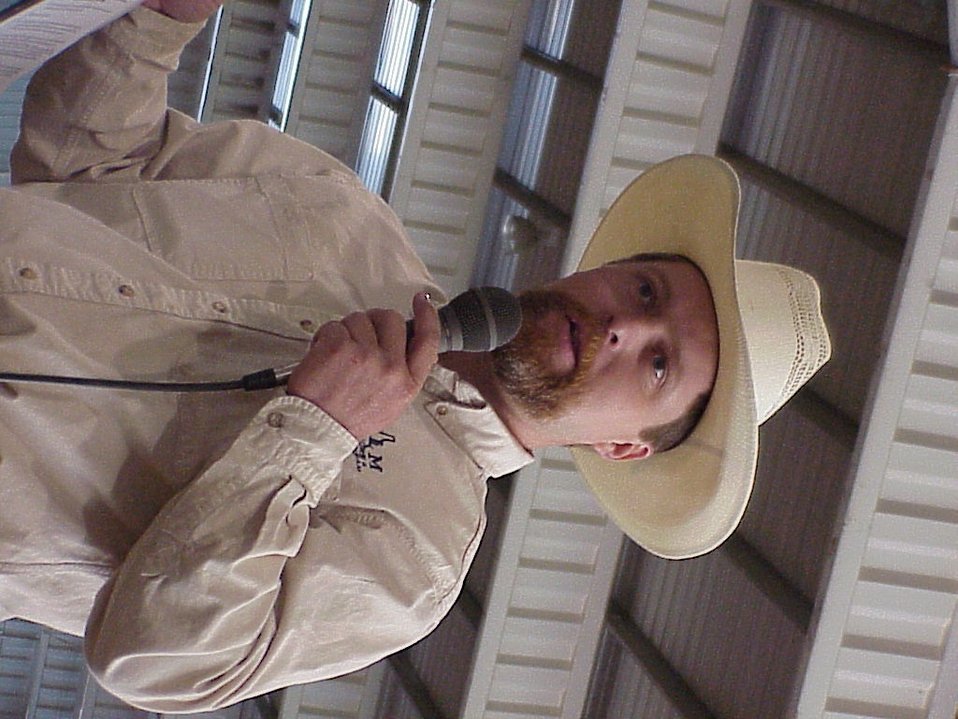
Lewiston Wild Horse and Burro Adoption Program Auction WHB indoor auction Cottonwood Field Office UCSC Upper Columbia Salmon Clearwater District